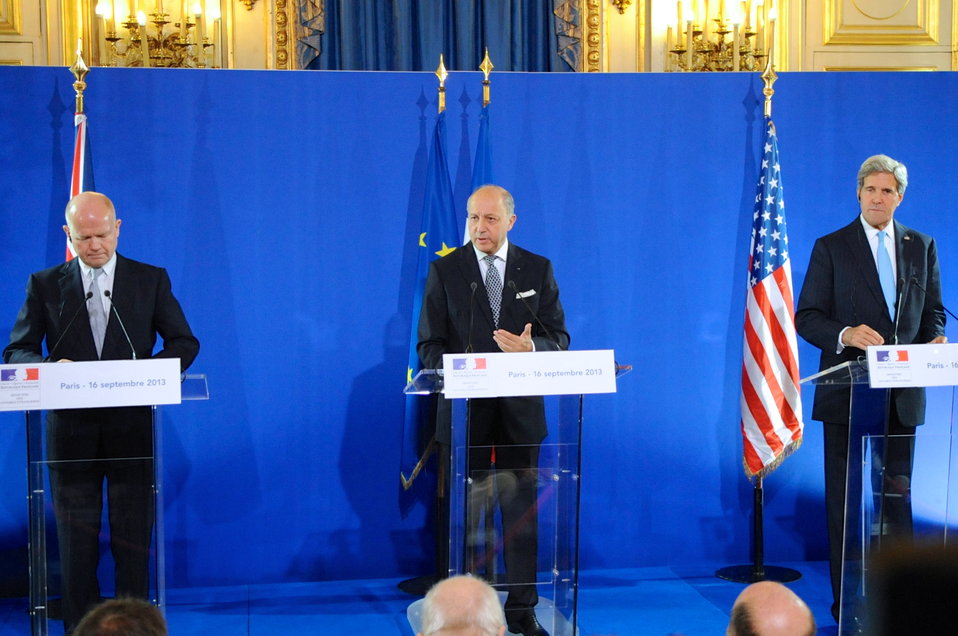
Secretary Kerry, P3 Foreign Ministers Hold News Conference About Syria

U.S. Secretary of State John Kerry shares the stage for a news conference with British Foreign Secretary William Hague and French Foreign Minister Laurent Fabius after P3 meetings focused on Syria at the Ministry of Foreign Affairs in Paris on September 16, 2013.